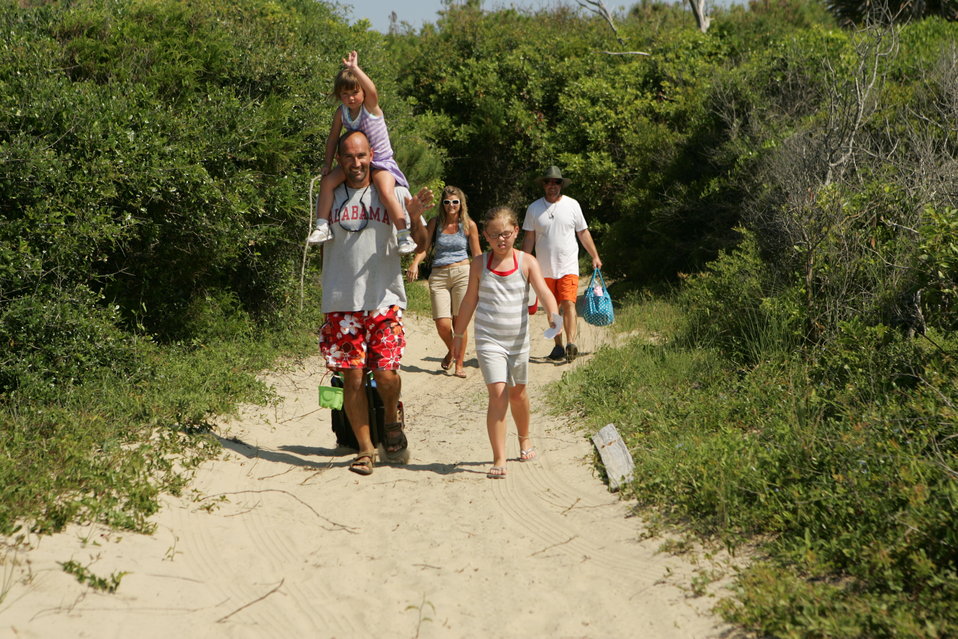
Beach Day

A family heads towards the beach on the refuge.